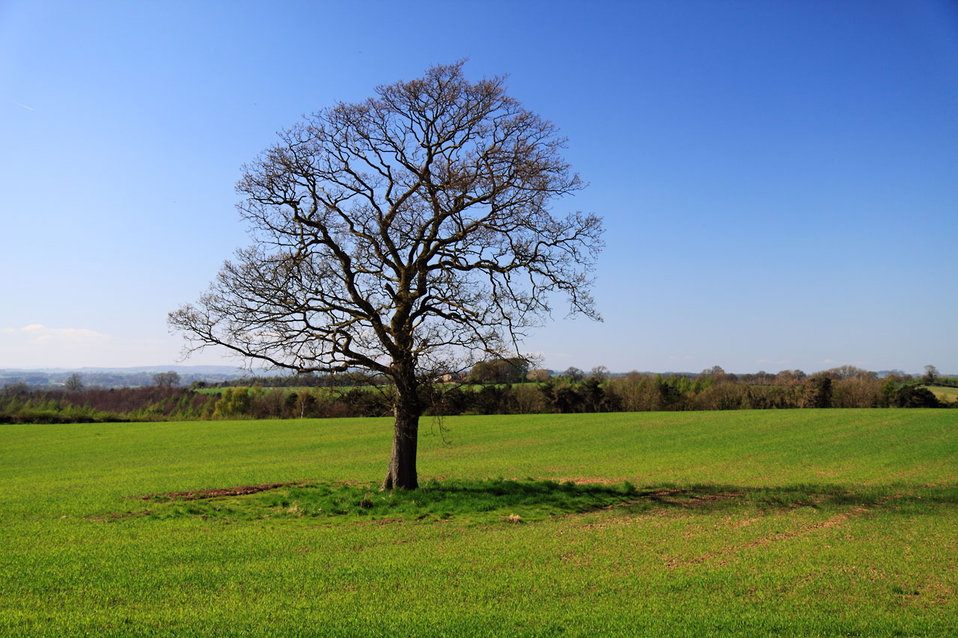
Lonely tree

Lonely single tree in the fields.